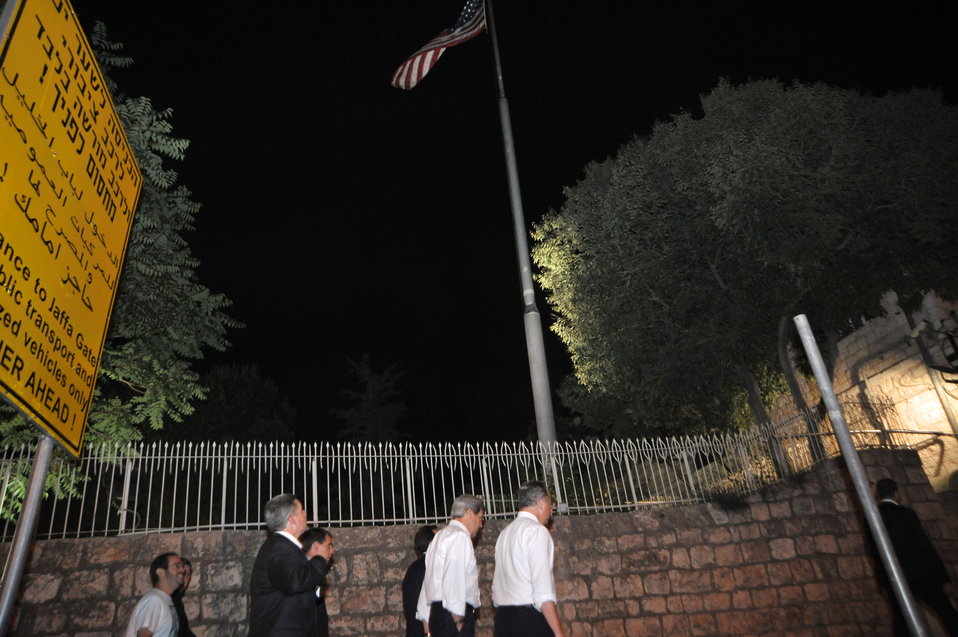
Secretary Kerry Takes a Walk in Jerusalem

U.S. Secretary of State John Kerry, accompanied by Deputy Special Envoy for Middle East Peace Frank Lowenstein and other senior advisors, walks past the U.S. Consulate General in Jerusalem after more than six hours of talks with Israeli Prime Minister Benjamin Netanyahu on June 30, 2013.